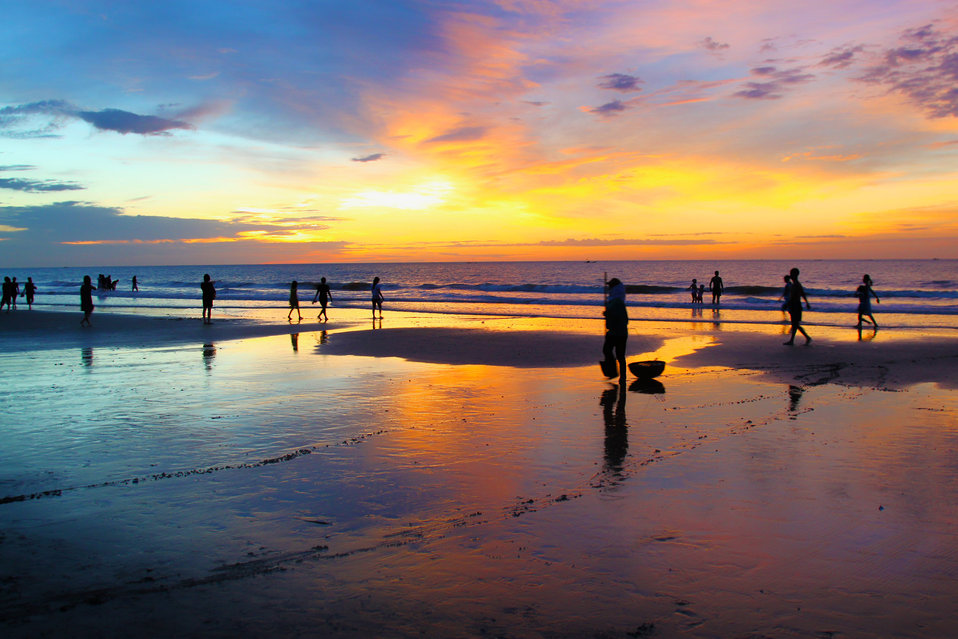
Sunrise #3

Sunrise in sam son beach, việt nam.